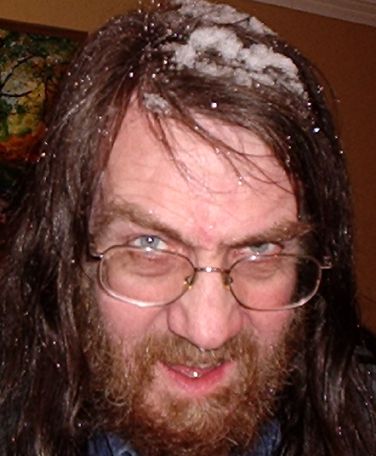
Roger W Haworth with snow on his head at home in Croydon. Likeness taken 2004 Jan 28.